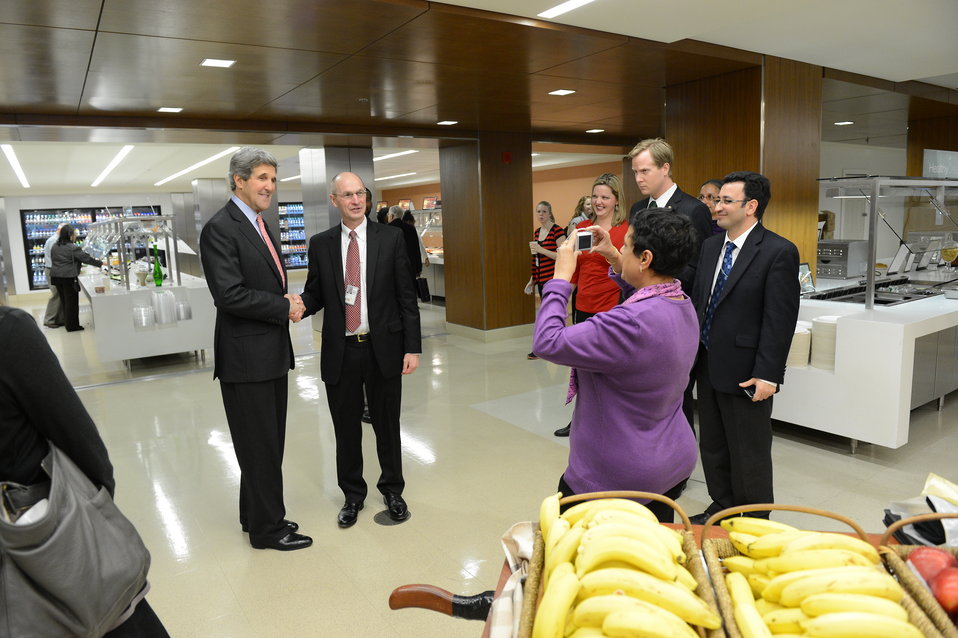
Secretary Kerry Drops by the Cafeteria

U.S. Secretary of State John Kerry drops by the cafeteria at the U.S. Department of State in Washington, D.C., February 15, 2013.